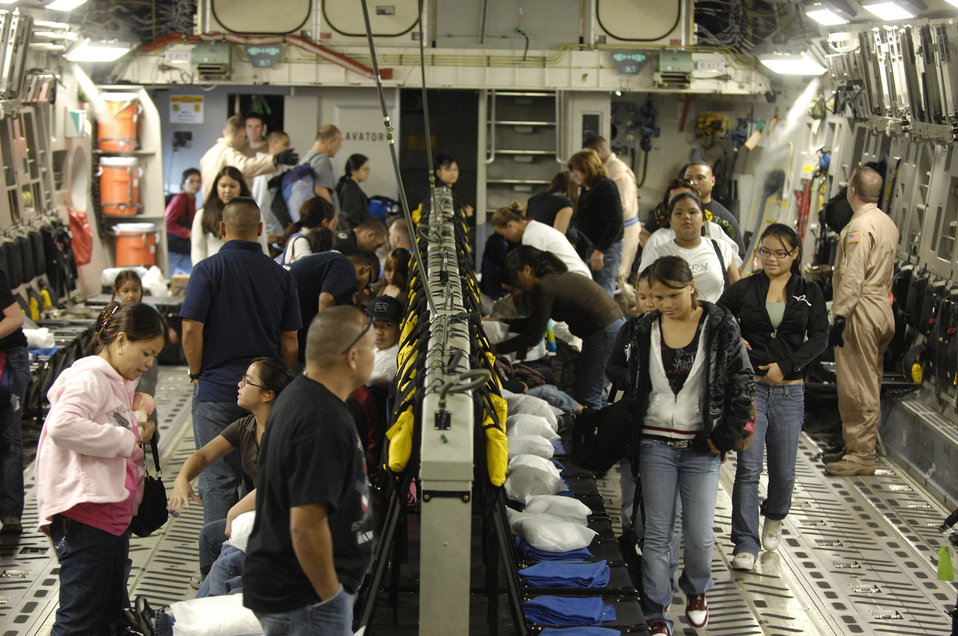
C-17 Reaches Across the Globe

Space available passengers board A C-17 Globemaster III bound for Andersen Air Force Base, Guam on Dec. 17, 2008. The jet will transport supplies from Andersen and Kadena air bases to Afghanistan.